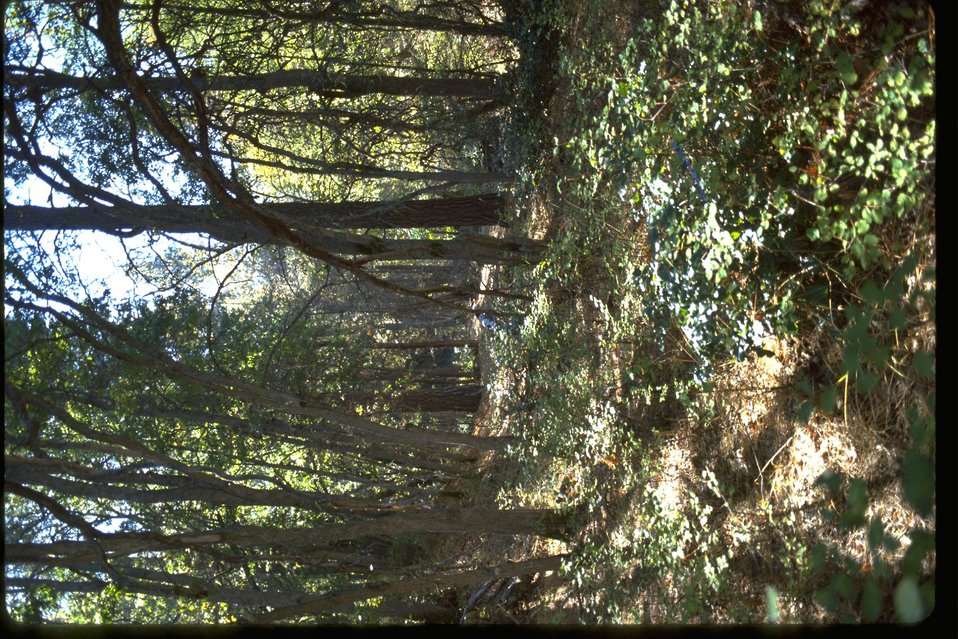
Bench above Lower Juniper. Vegetation: Pinpon, Quekeg, and Berqua.